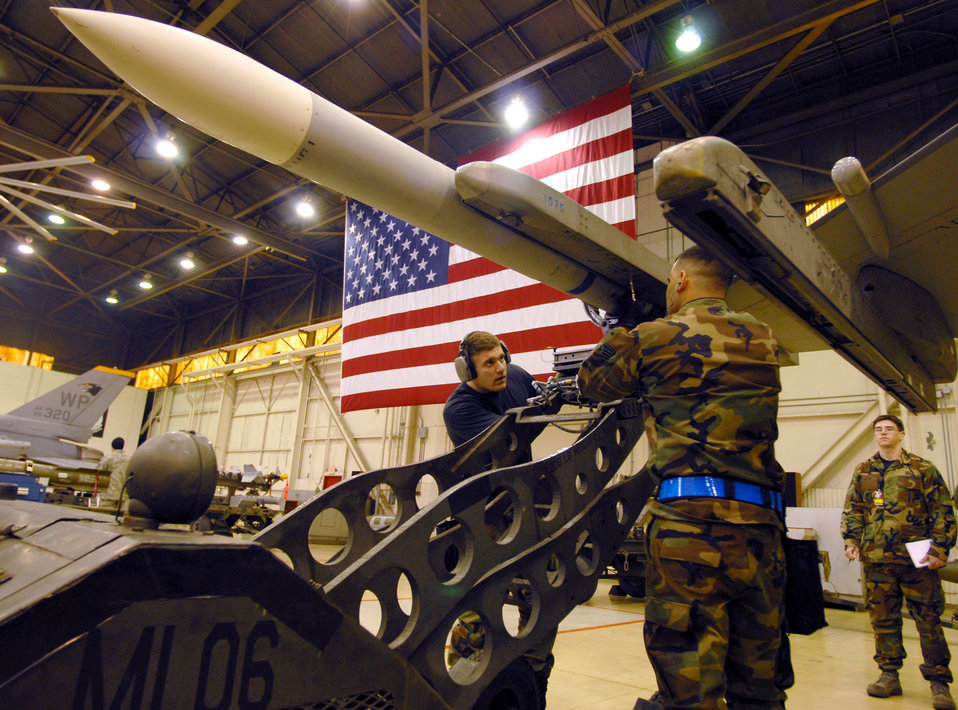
Heavy metal

Senior Airman Jon Michael Schwartz (left) and Staff Sgt. Danny Colon (right) secure a bomb to an F-16 Fighting Falcon as Senior Airman Tyler Brown (background) judges during a weapons load competition Dec. 14 at Kunsan Air Base, South Korea. This was the final weapons load competition between the 80th and 35th Fighter squadrons for 2007. Airman Schwartz and Sergeant Colon are assigned to the 8th Aircraft Maintenance Squadron.